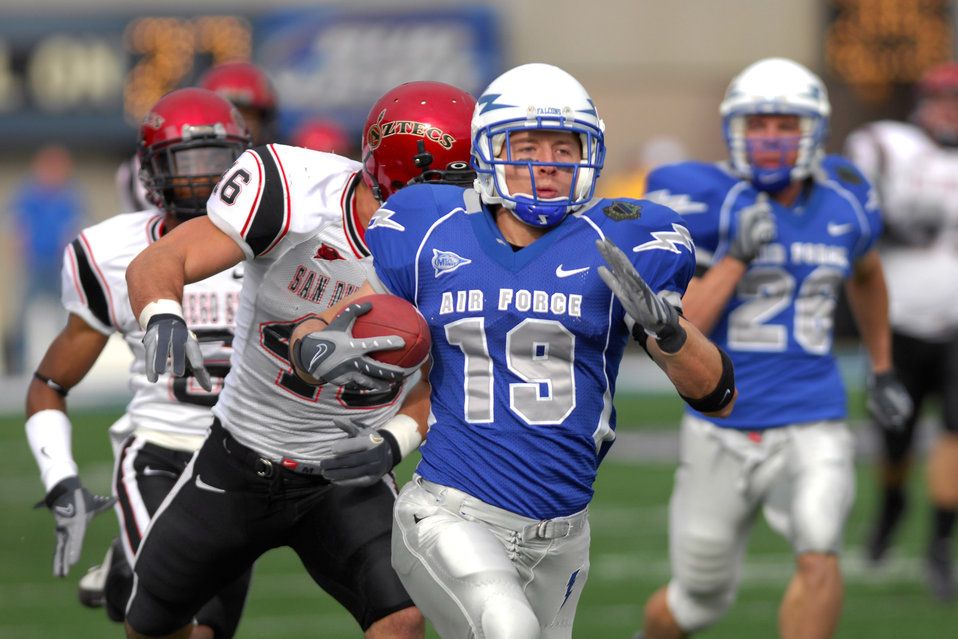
Football: Bowl-bound Falcons dominate regular season finale

Falcon z-back Ty Paffett races past San Diego State linebacker Russell Allen during Air Force's 55-23 win over the Aztecs Nov. 17 at the Academy's Falcon Stadium. Paffett rushed for a career-high 107 yards and three touchdowns, including one for 73 yards.